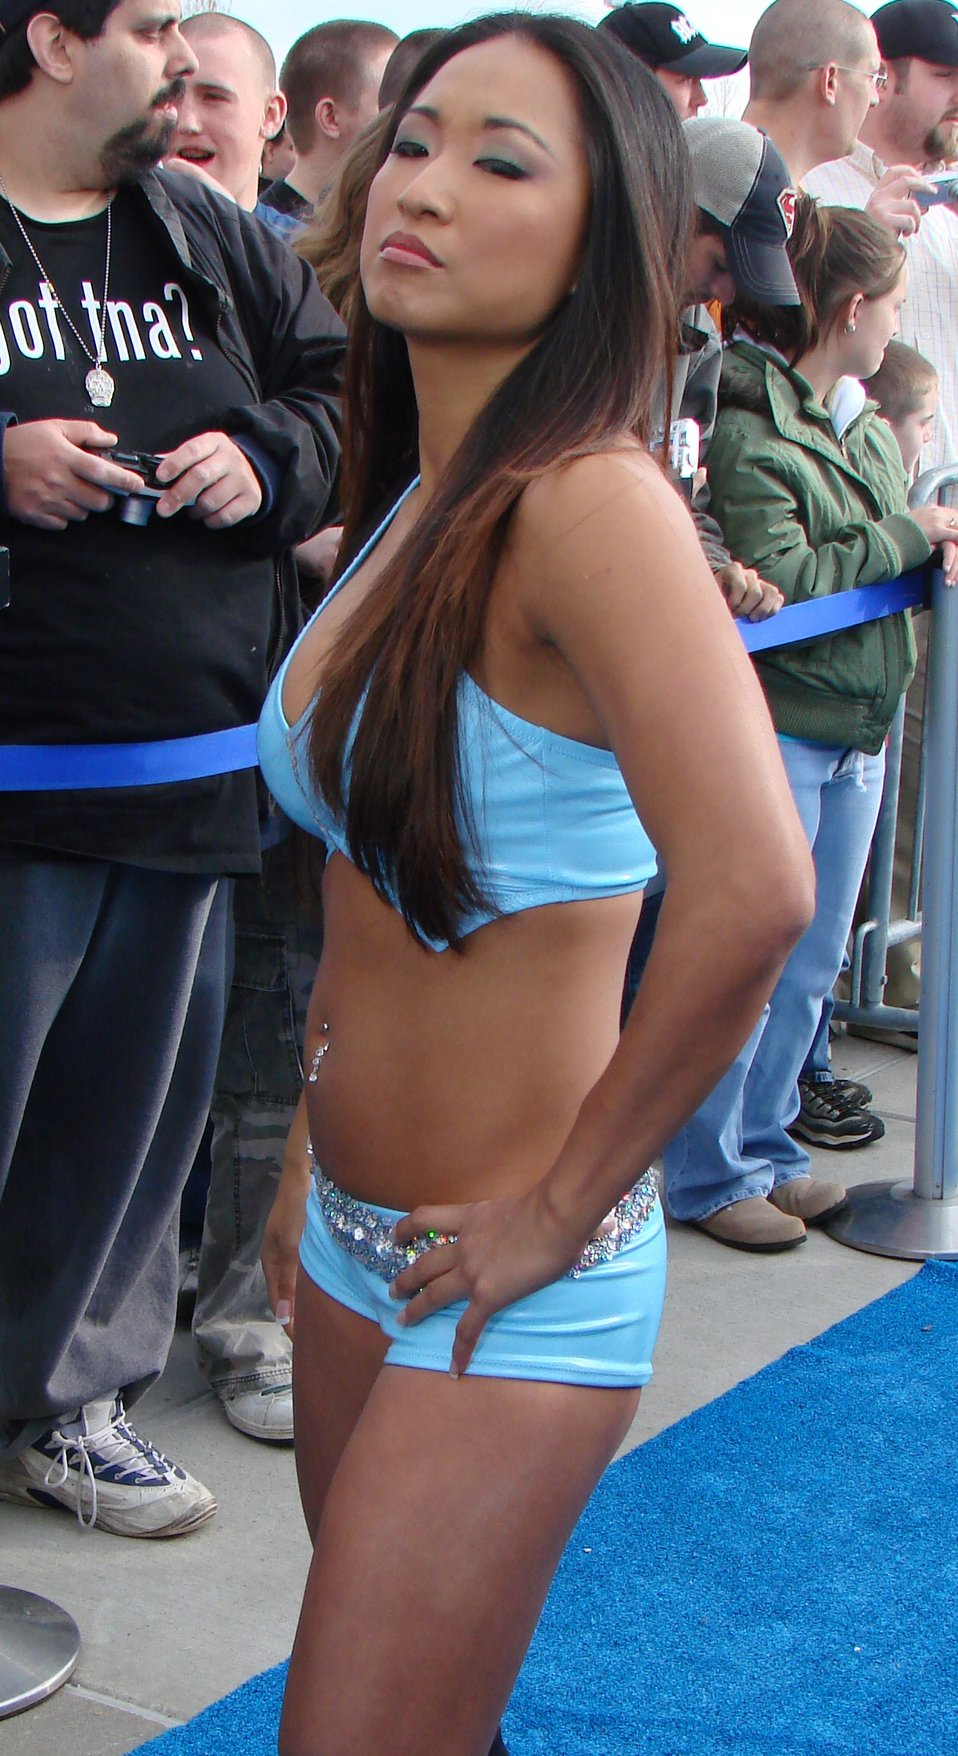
Gail Kim outside of the Family Arena in St. Charles, MO on April 15 2007.